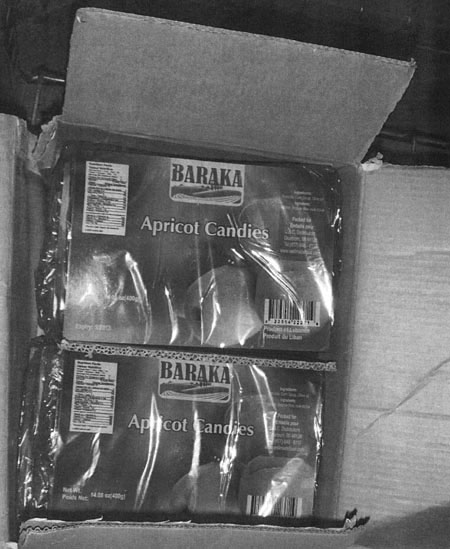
RECALLED - Apricot Candies

December 29, 2011 - Product Recall - Undeclared Sulfites in Baraka Apricot Candies, from Lebanon.